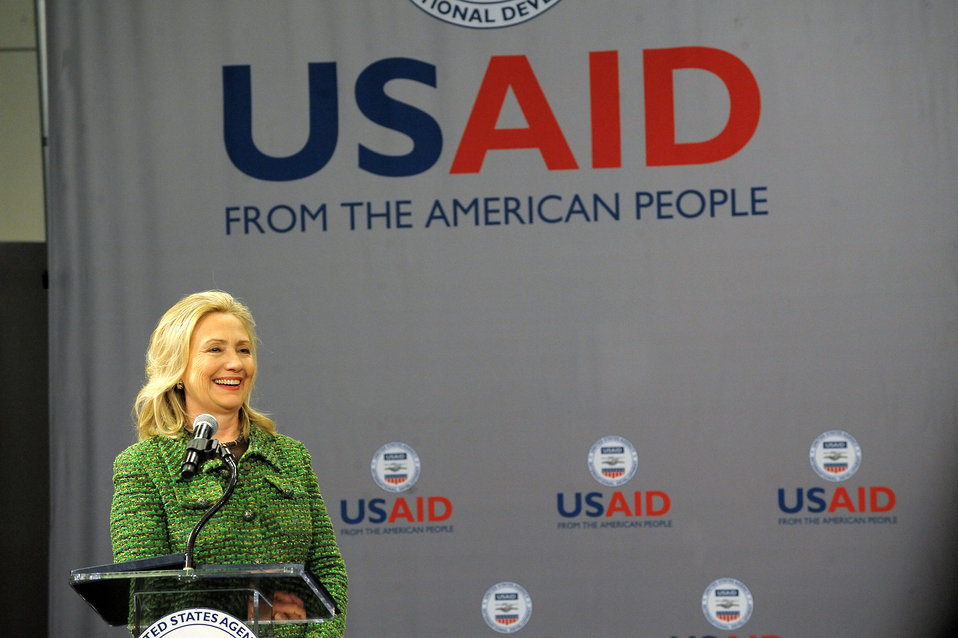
Secretary Clinton Participates in the USAID Town Hall Meeting

U.S. Secretary of State Hillary Rodham Clinton participates in the USAID town hall meeting at the Ronald Reagan Building in Washington, D.C., on February 15, 2012.